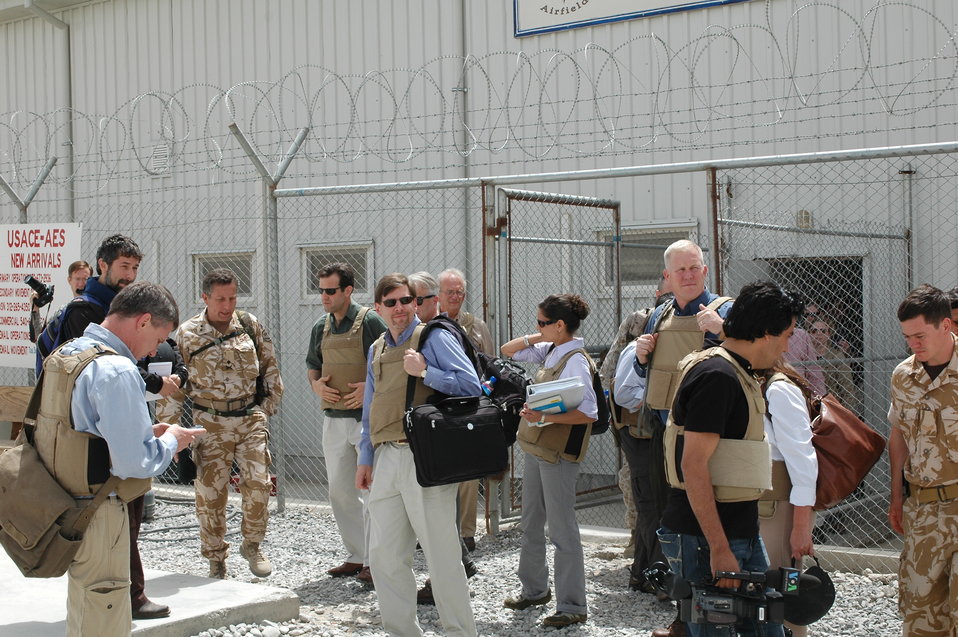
CODEL Berman